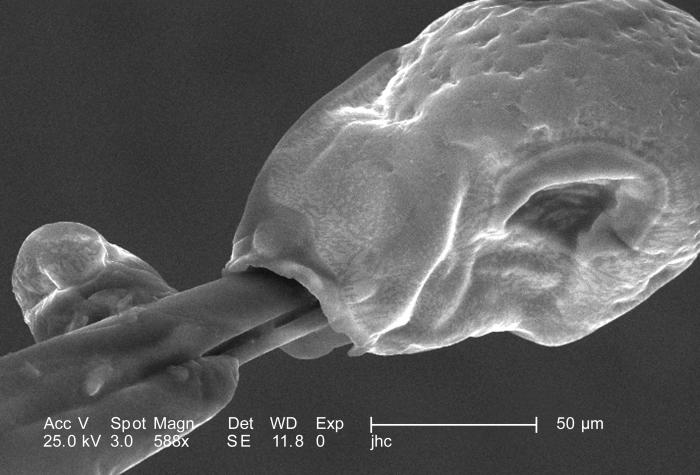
Under a moderately high magnification of 588X, this scanning electron micrograph (SEM) focused on the distal tip of a female 'velvet ant's', Dasymutilla sp., stinger. Note that the stinger's tip is encased in a bulbous sheath, which may act to protect the delicate sharp tip from being damaged, which would reduce its effectiveness when trying to penetrate its victim. Take a look at PHIL 9883 for an even closer view of this structure. Also see PHIL 4638, 6363, and 6364 for photographs of the ant revealing its coloration, and velvety covering of external chitinous hairs.